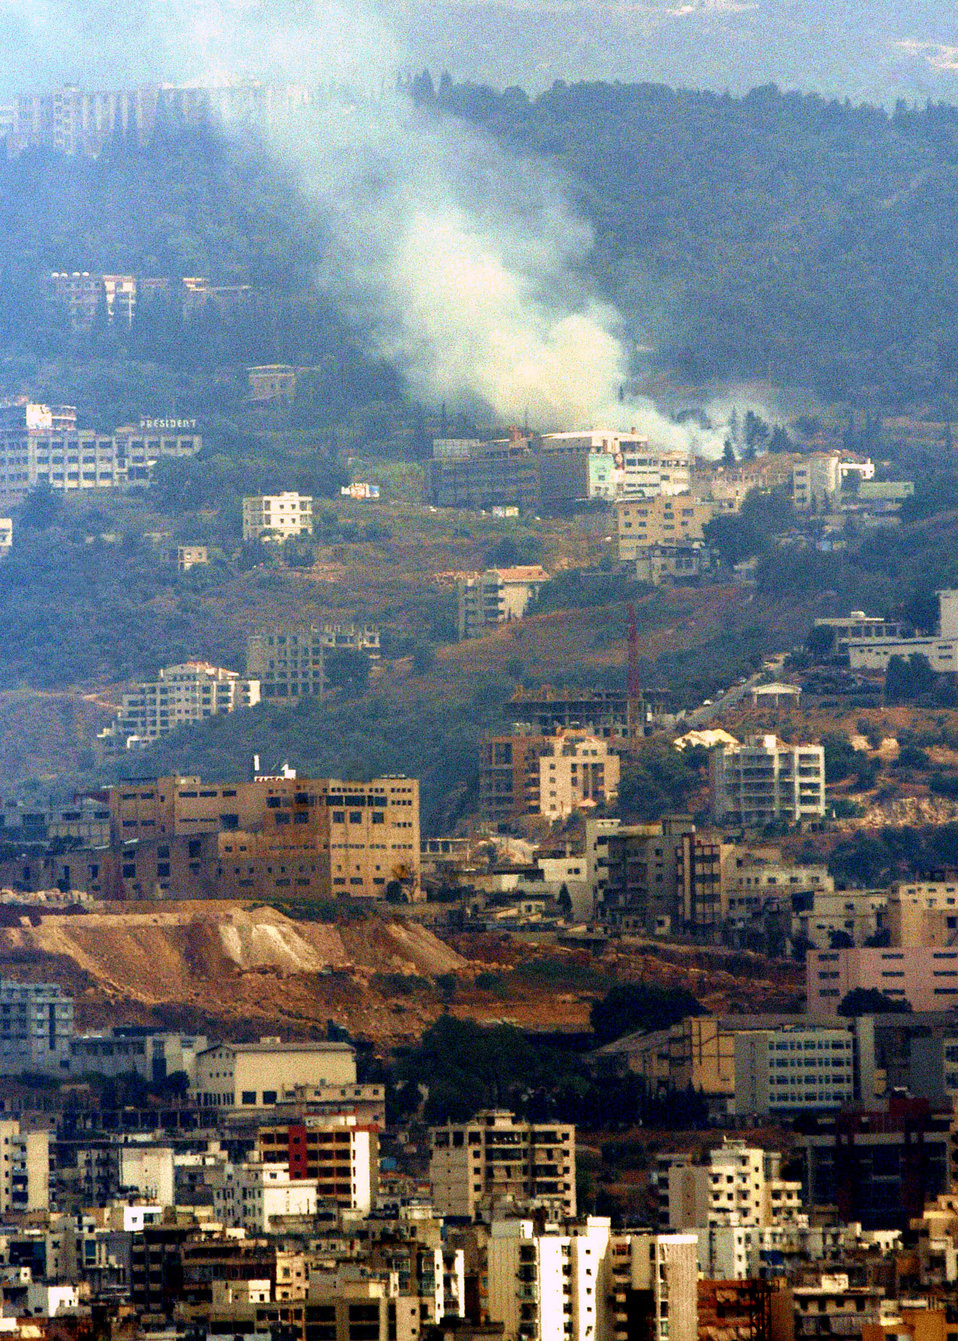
Book offers lessons on fighting terrorism with airpower

White smoke rises from a hillside following an Israeli air force strike July 22, 2006, in Beirut, Lebanon. A new study of last year's Israel-Hezbollah War, published by Air University Press, examines the role of airpower in fighting terrorist organizations and is part of a larger effort to develop strategic thinking in the Air Force.